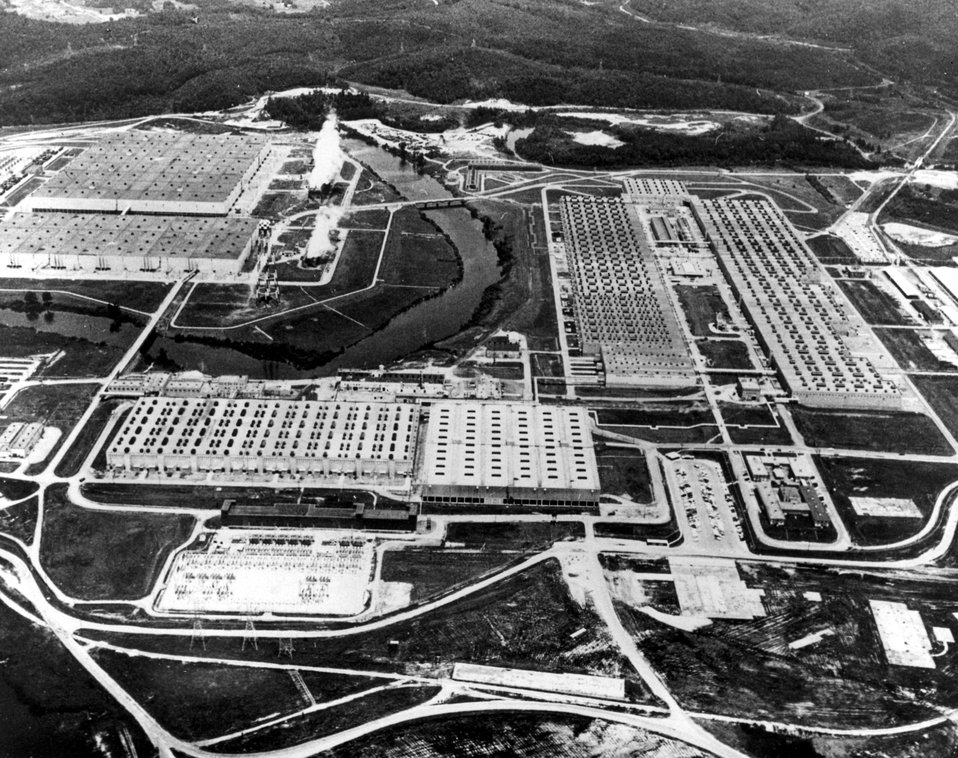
This huge plant at Oak Ridge, Tennessee, produces uranium-235 by the gaseous diffusion process. Circa 1965.